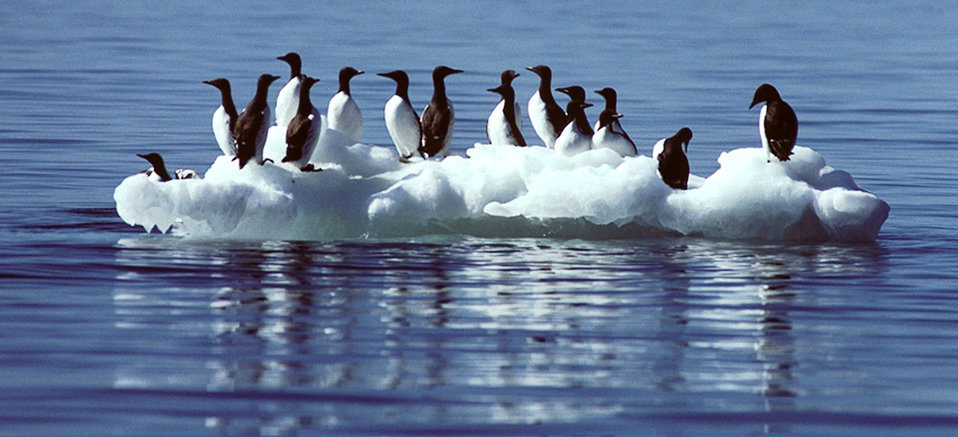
Common murres sitting on floating ice near Cape Lisburne, Alaska. Eggs from this species are being used to monitor the cycling of mercury in the Arctic biosphere.